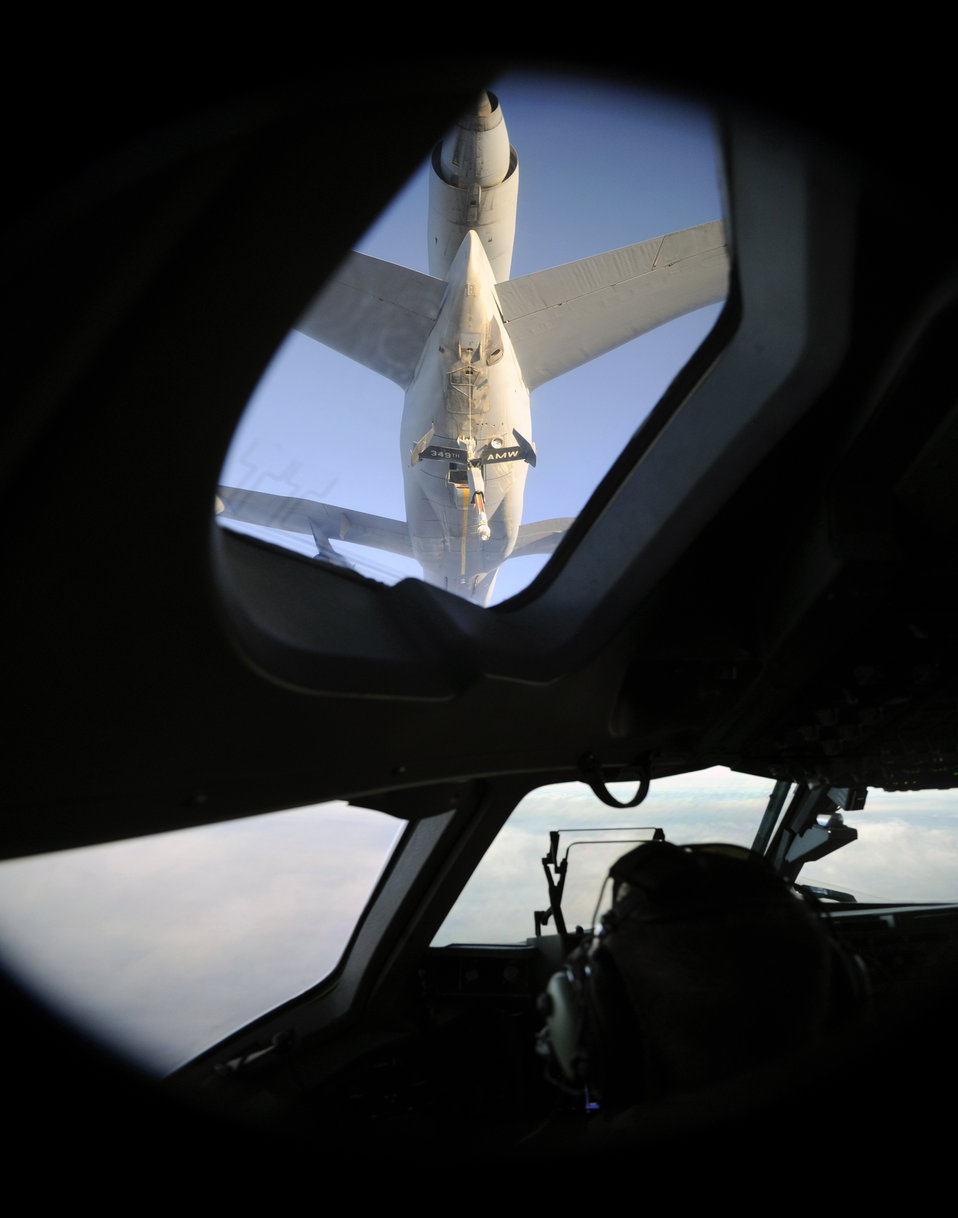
Emergency Response for Japan's Earthquake disaster

An U.S. Air Force KC-10 Extender from the 349th Air Mobility Wing prepares to perform an aerial refueling of an U.S. Air Force C-17 Globemaster III while it is en route to Japan with a Search and Rescue team during an emergency response on March 12, 2011. Aircrew from the 4th Airlift Squadron, McChord Air Force Base, Wash. are transporting members and equipment of the Los Angeles Search and Rescue team to Japan to aid in recovery and care of the victims of the recent earthquake.